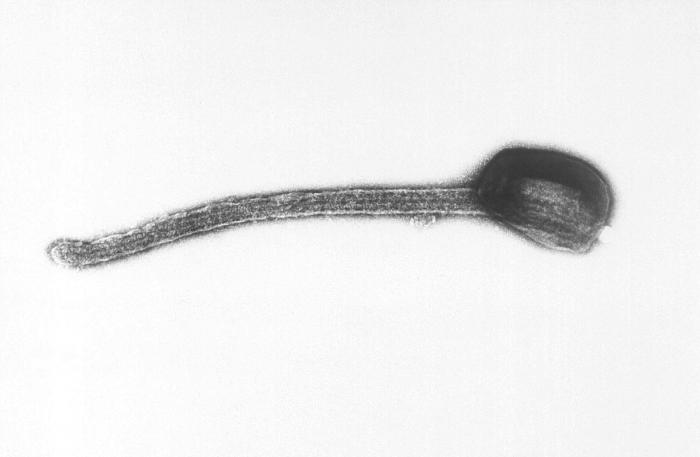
Created by CDC microbiologist Charles Humphrey, this negatively-stained transmission electron micrograph (TEM) revealed some of the ultrastructural morphologic features displayed by an Ebola virion discovered from the Ivory Coast of Africa.